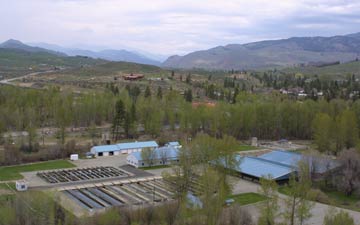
Winthrop National Fish Hatchery

An aerial view of Winthrop National Fish Hatchery, which is one of three fish hatcheries in the Leavenworth Fisheries Complex in north central Washington.